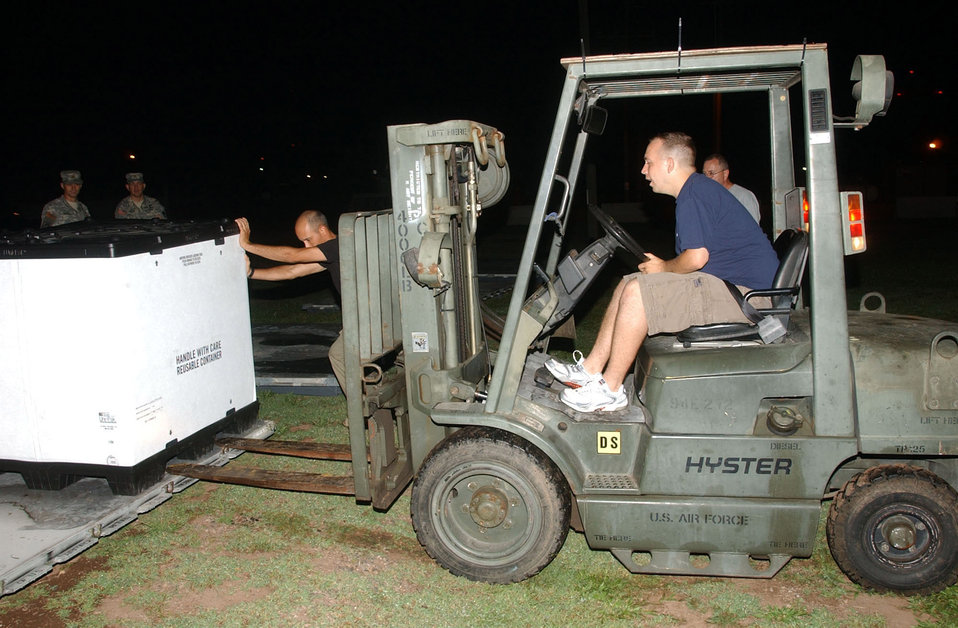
SOUTHCOM medics respond to Peru quake relief efforts

Staff Sgt. Tristen Wachter (driving forklift) loads medical supplies onto a pallet Aug. 16 at Soto Cano Air Base, Honduras, with members of the medical element's mobile surgical team. The supplies were being shipped by C-130 Hercules to Peru to assist with earthquake relief efforts. Sergeant Wachter is with the 612th Air Base Squadron.